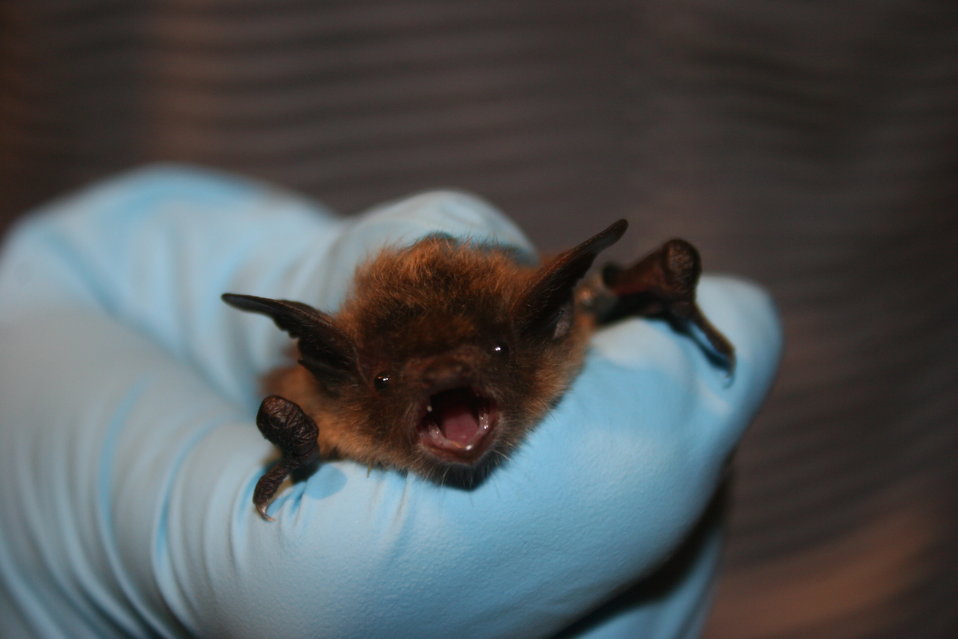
Little brown bat

USFWS biologist holds little brown bat.